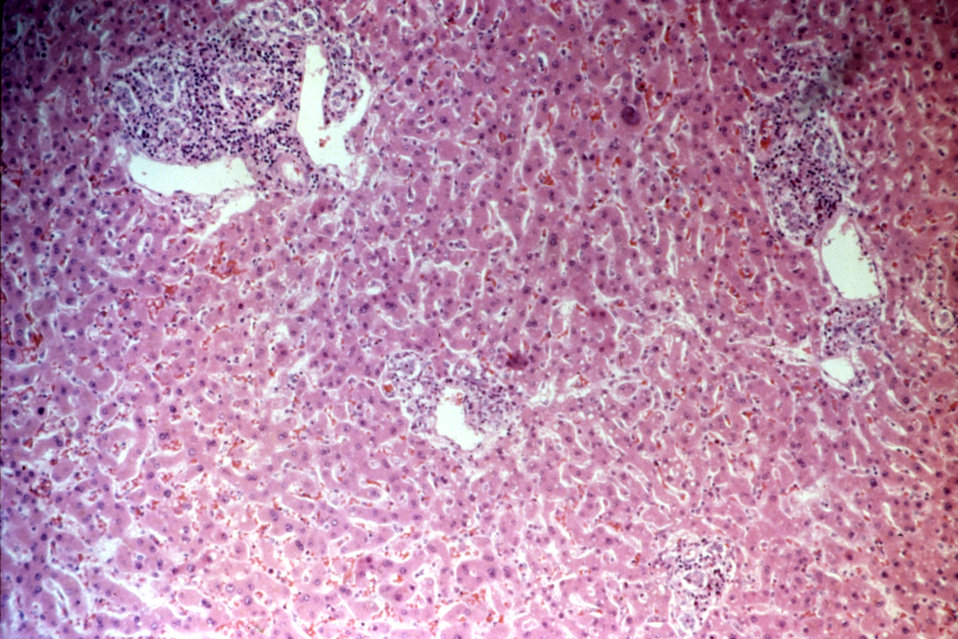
This micrograph reveals the histopathologic changes in liver tissue due to Toxic Shock Syndrome (TSS) taken during an autopsy.